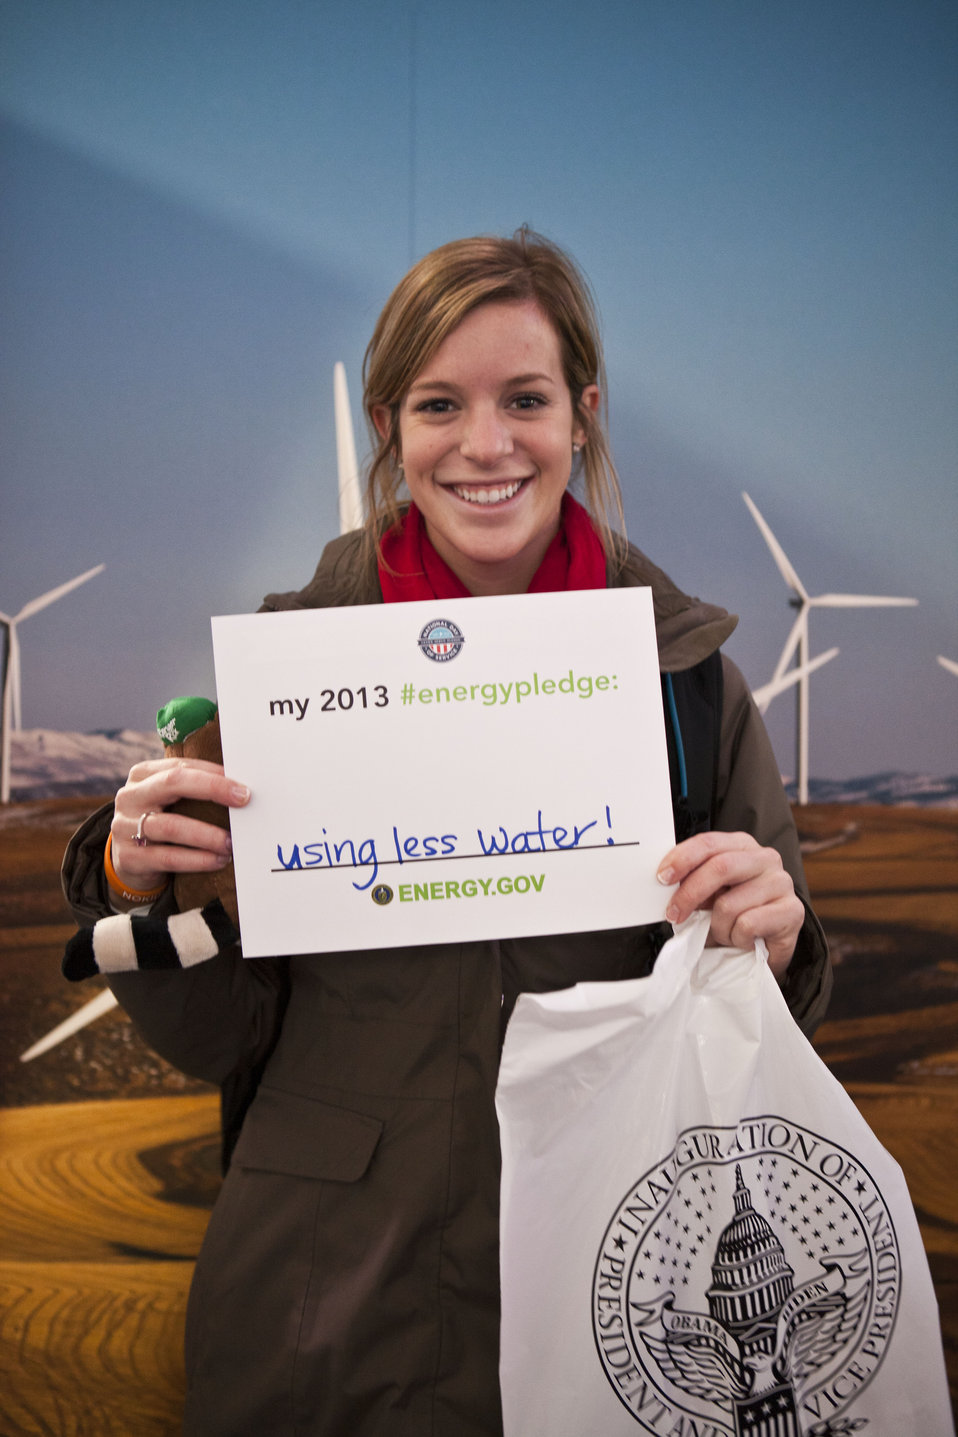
What's your #energypledge?